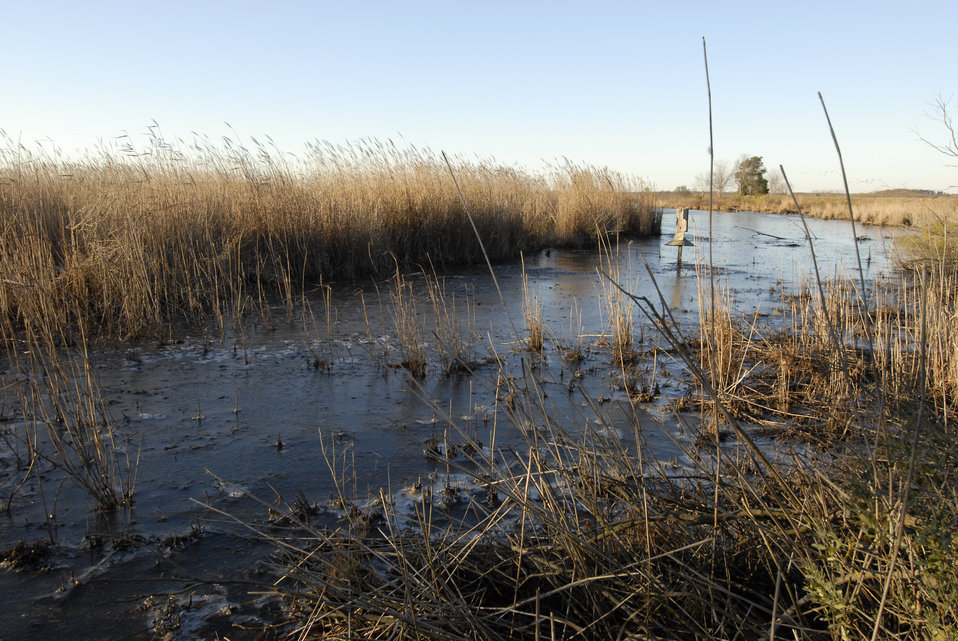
A winding waterway creates a natural wetland area at Blackwater Marsh at Blackwater National Wildlife refuge in Cambridge, Maryland on March 9, 2006. The refuge is a waterfowl sanctuary for migrating birds along the critical migration highway called the Atlantic Flyway. Blackwater refuge has over 25,000 acres of freshwater impoundments, brackish tidal wetlands, open fields, and mixed evergreen and deciduous forests.